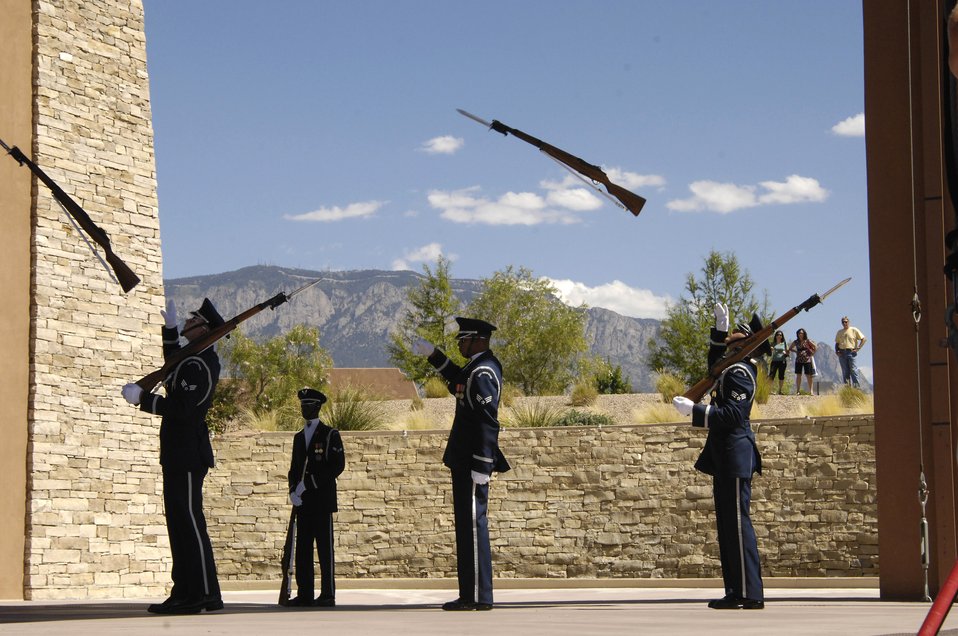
Drill team celebrates Air Force anniversary

The Air Force Honor Guard Drill Team performs Sept. 14 at the Sandia Resort in Albuquerque, N.M., during the state's celebration of the Air Force's 60th anniversary. Servicesmembers from Holloman, Cannon and Kirkland Air Force Bases were in attendance.